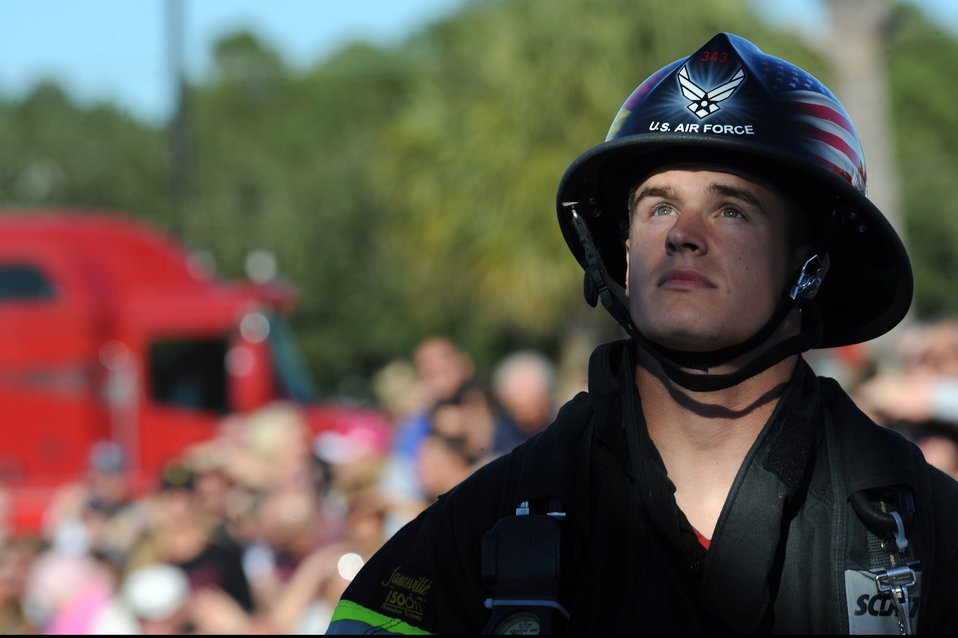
Air Force firefighters showcase skills in world competition

Senior Airman Robert Anderson watches his teammate during the relay competition Nov. 13, 2010, at the 2010 Scott Firefighter Combat Challenge in Myrtle Beach, S.C. Airman Anderson is assigned to the 52nd Civil Engineer Squadron at Spangdahlem Air Base, Germany.